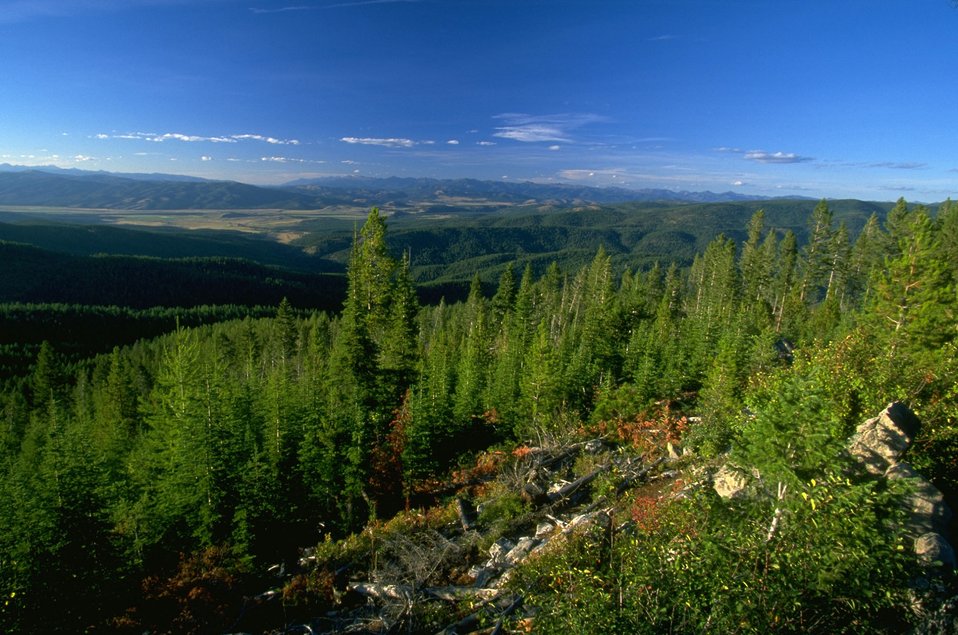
Blackfoot Valley seen from Garnet Back Country Byway